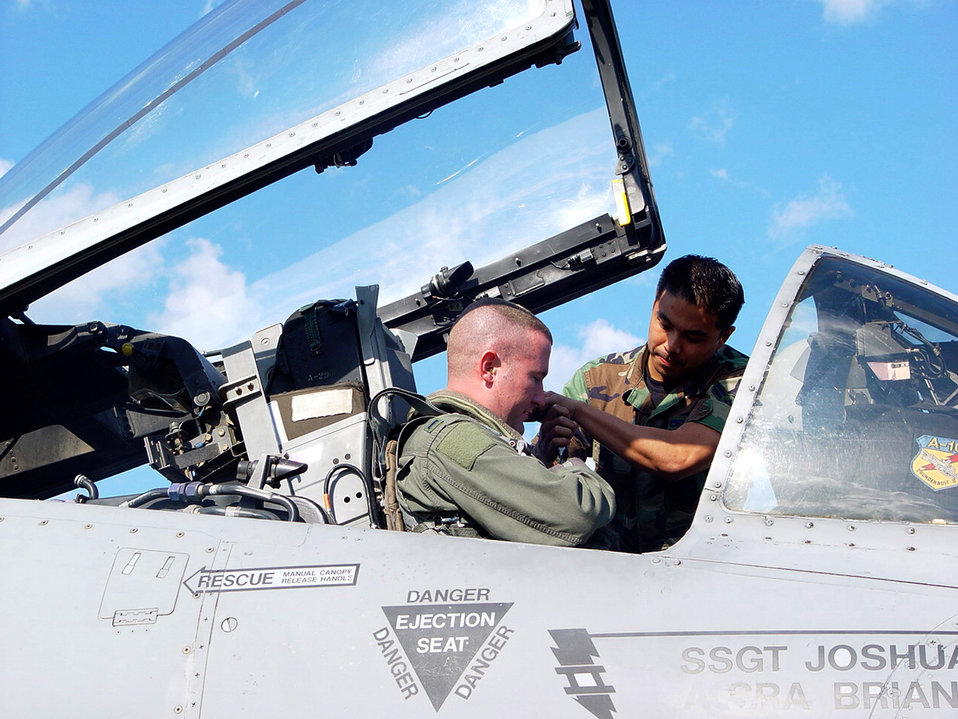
The mission continues

SUWON AIR BASE, South Korea -- Airman 1st Class Rodney Transfiguracion straps in 1st Lt. Ben Fallin in his A-10 Thunderbolt II prior to takeoff. Maintainers, pilots, weapons specialists, security forces, and medical and services airmen from Osan Air Base, South Korea, are working here while Osan's runway is closed for repairs. Transfiguracion is assigned to the 51st Aircraft Maintenance Squadron and Fallin is from the 25th Fighter Squadron.